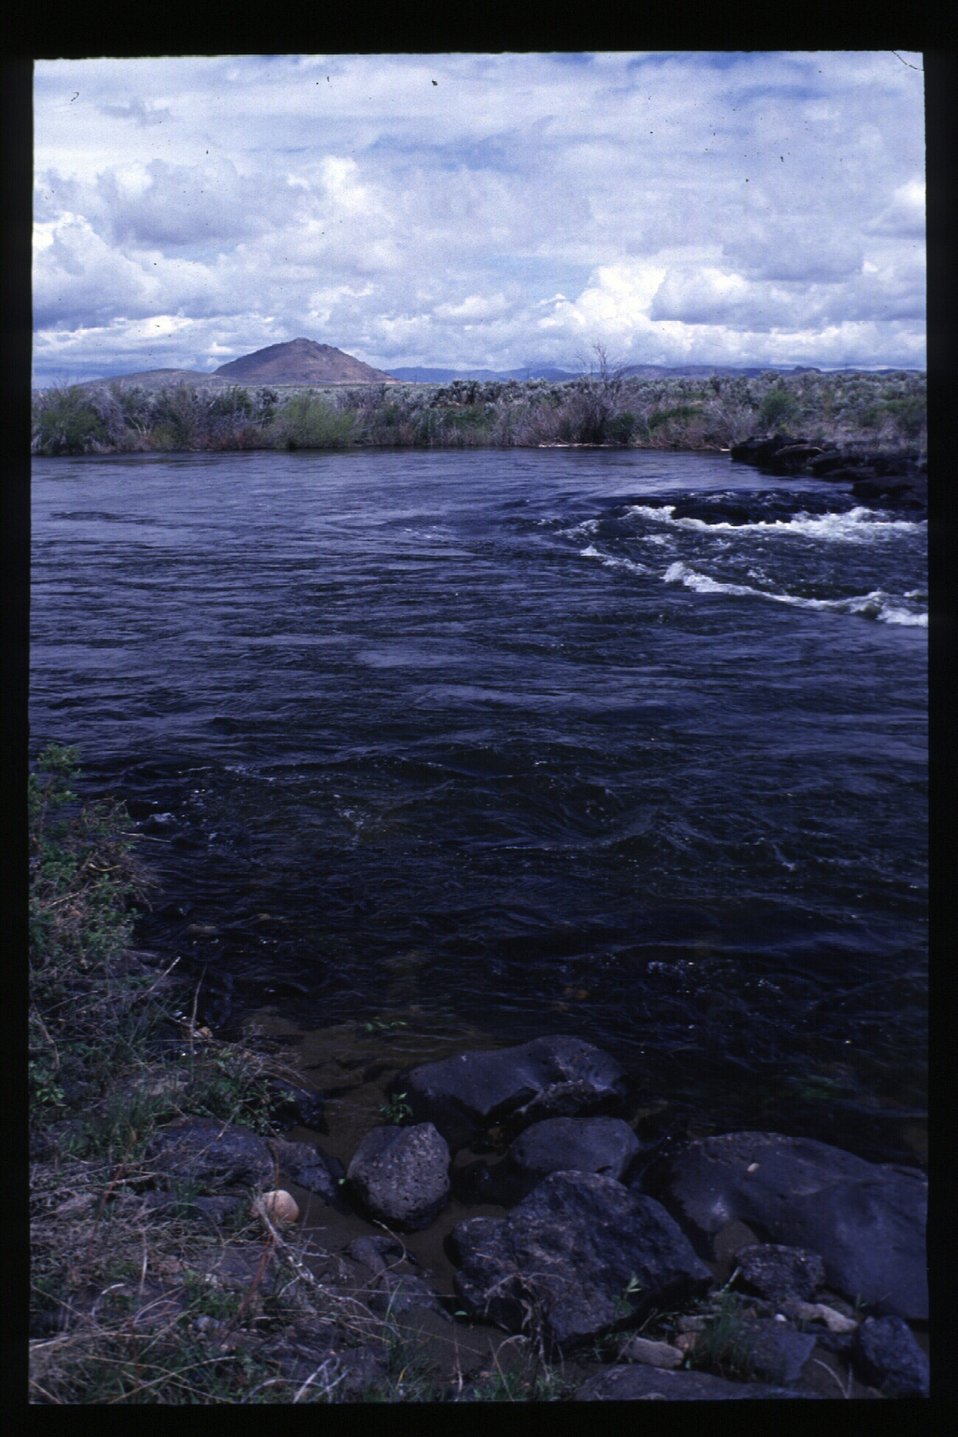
Big Wood River Scenic USRD Upper Snake River District